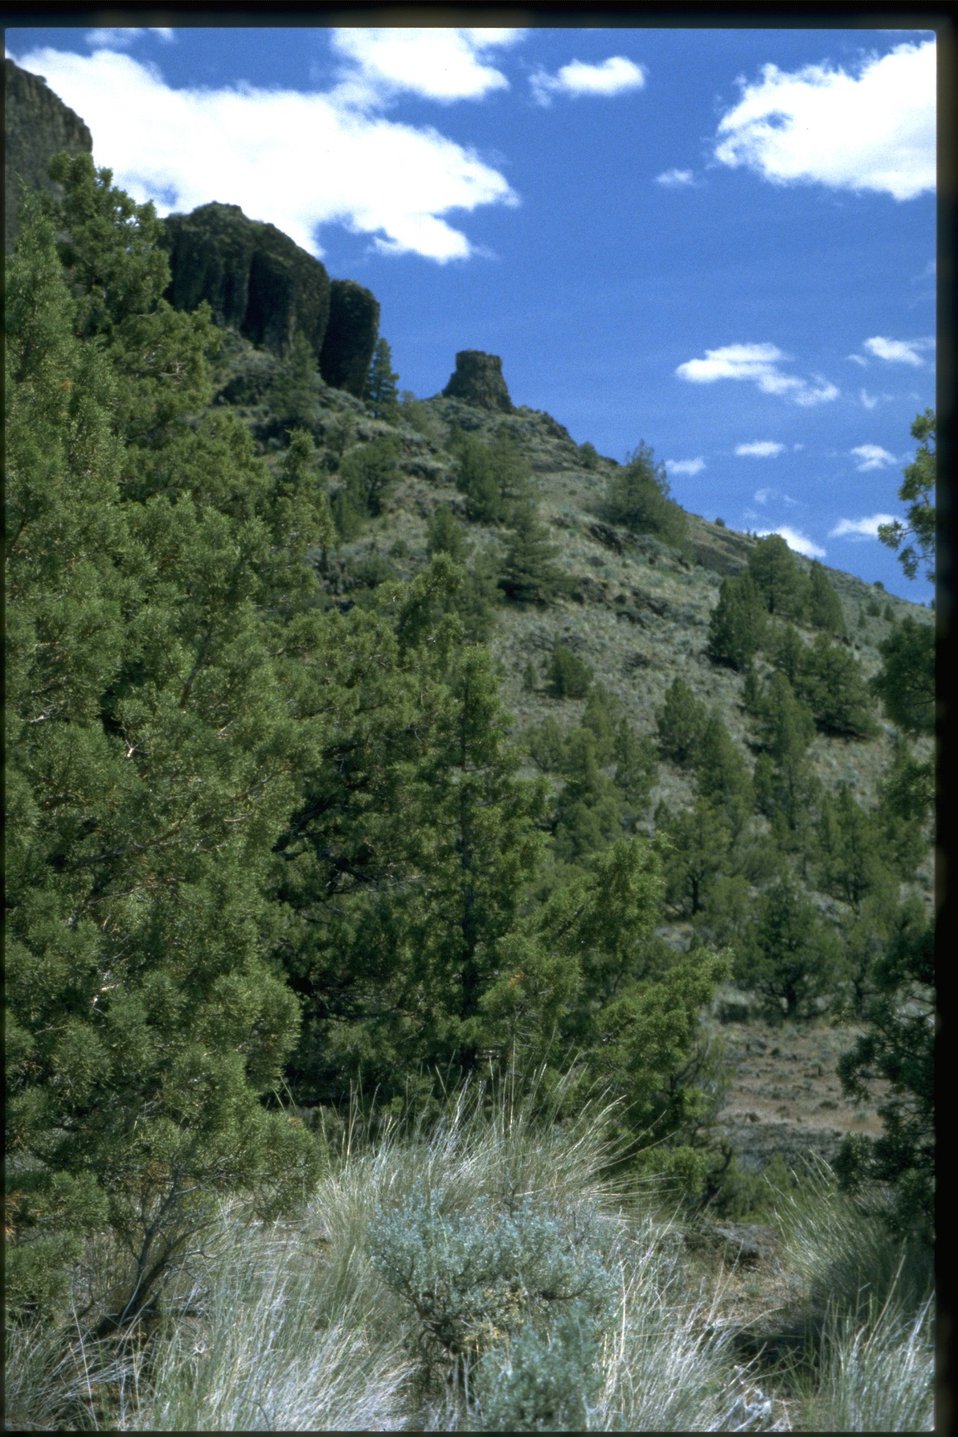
Chimney Rock, as viewed from the trail below.